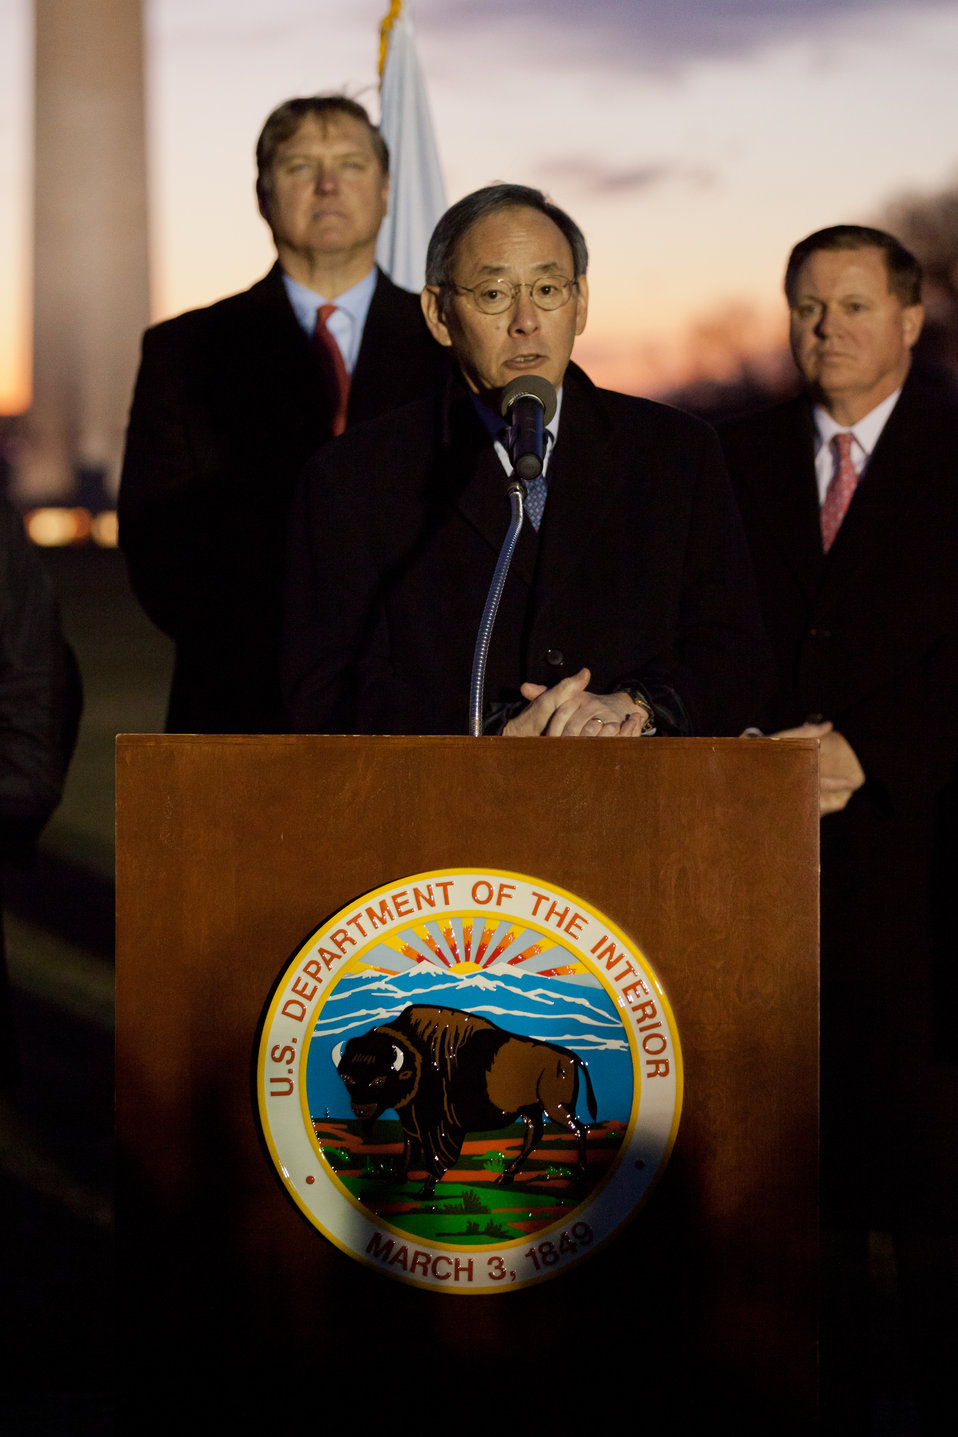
Energy Secretary Steven Chu discusses the 65% savings the National Parks Service will experience on their next electric bill by switching to energy efficient LED lights.